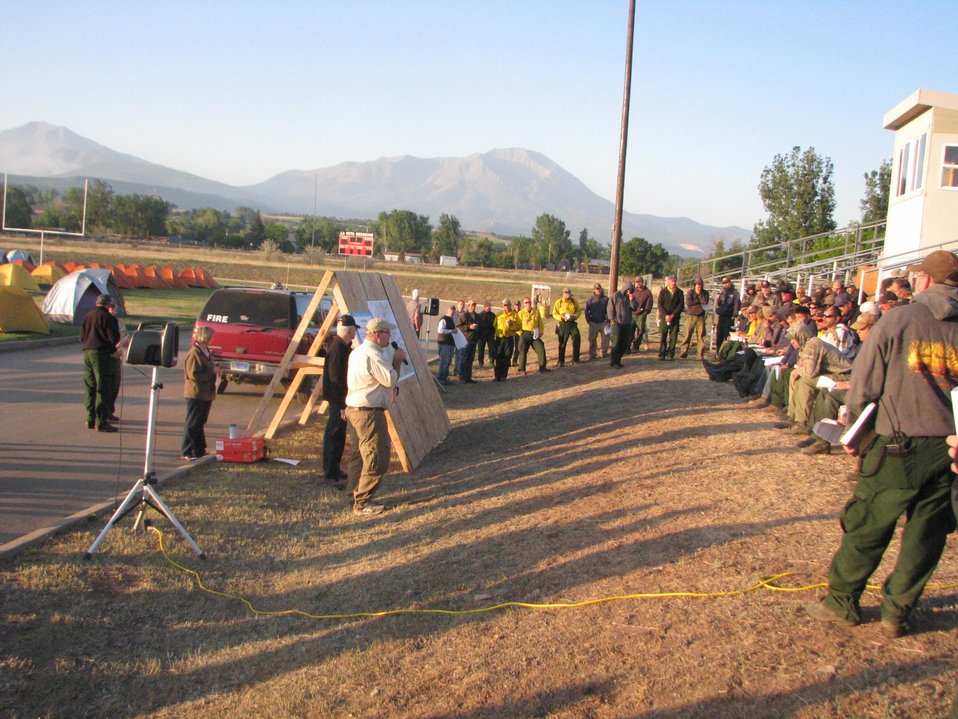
Morning briefing is held at base camp with smoke column from fire in background. The East Peak Fire is located approximately 10 miles southwest of Walsenburg, CO and began on Jun. 19, 2013 by lightning. The fire has consumed approximately 13, 572 acres and is approximately 95% contained.